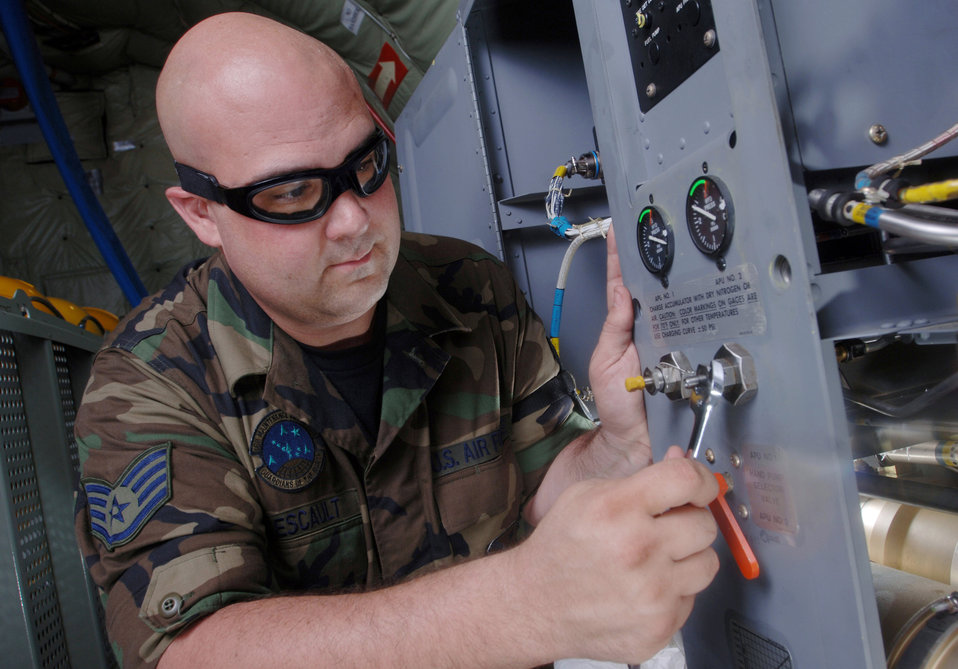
Alaska Airmen work at Guam

ANDERSEN AIR FORCE BASE, Guam (AFPN) -- Staff Sgt. Daniel Lescault uses a wrench to remove a line on an auxilliary power unit inside a KC-135 Stratotanker aircraft during inspection here. Sergeant Lescault is a hydraulic technician with the 168th Air Refueling Wing of the Alaska Air National Guard at Eielson Air Force Base. The wing trains and equips KC-135R crews to provide air refueling in support of worldwide taskings.